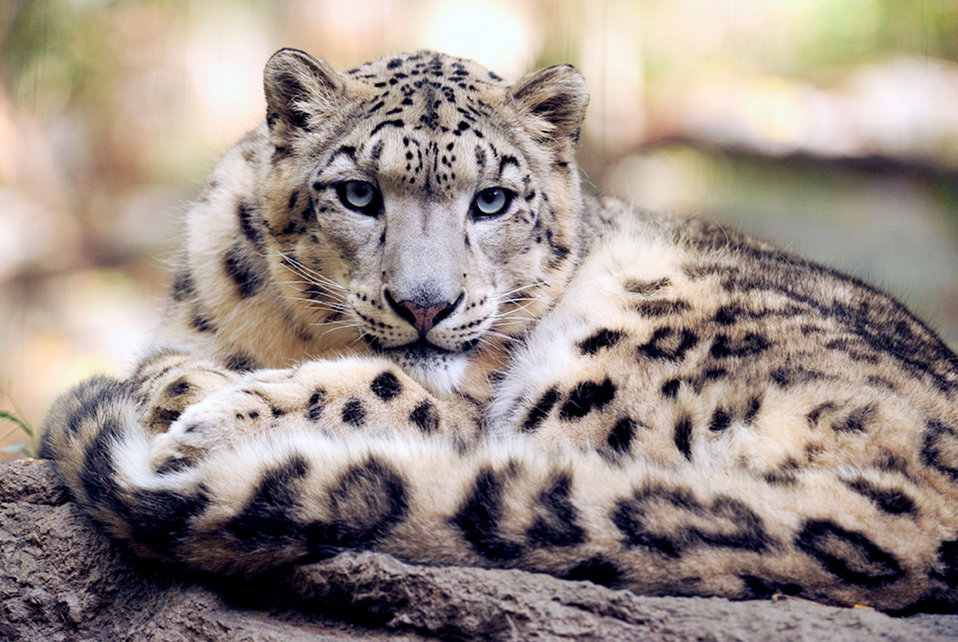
Snow Leopard

With support from USAID, Wildlife Conservation Society has been conserving wildlife and improving local livelihoods in Afghanistan since 2006. The project has helped Wakhan’s livestock herders as well as snow leopard conservation, with additional potential benefits for the area such as media and tourist interest.